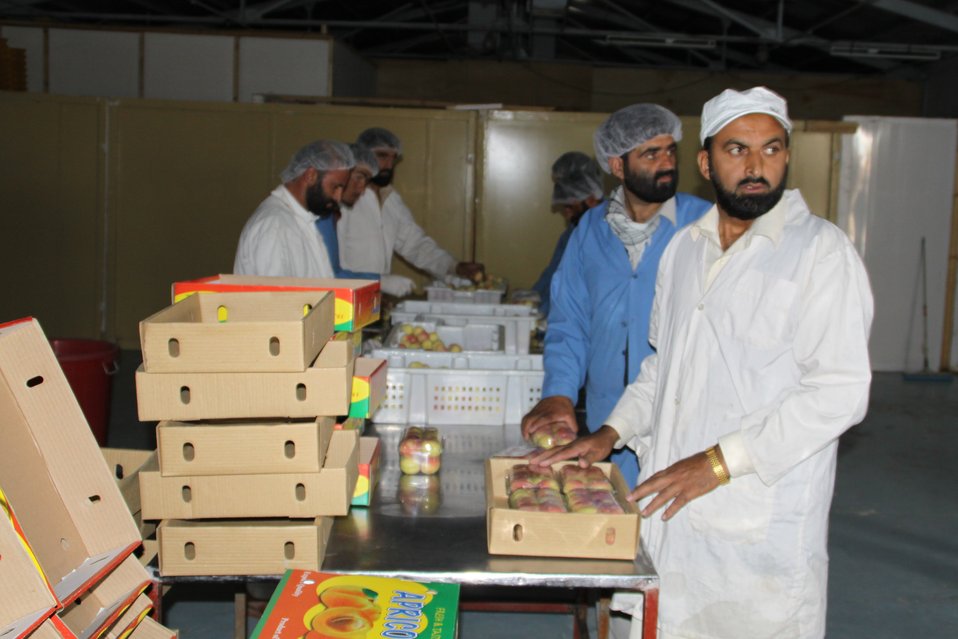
Badam Bagh Farm